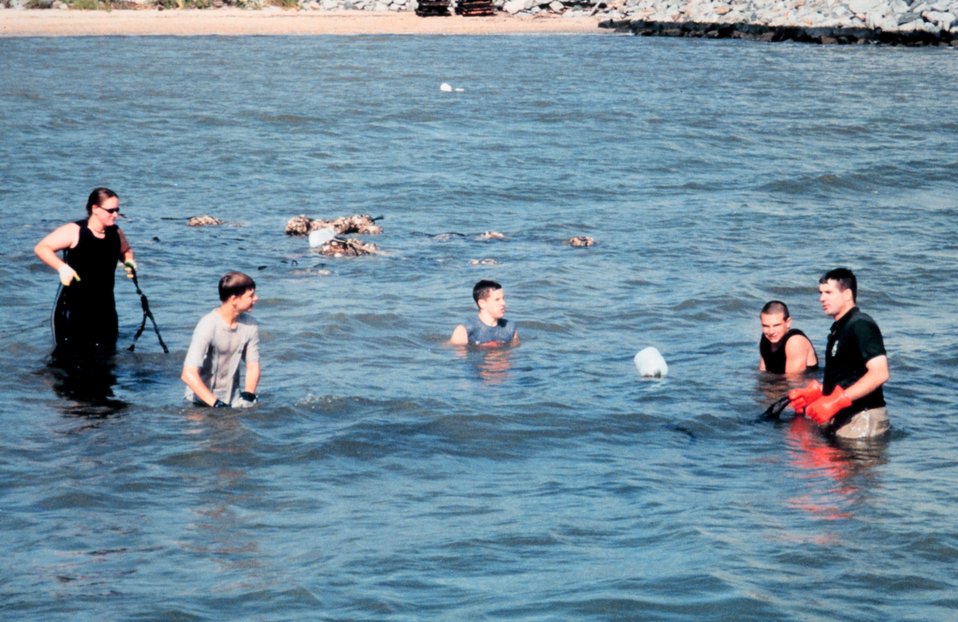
Volunteers from the Bay Bus Partnership Project assist the Oyster Recovery Partnership in their effort to transplant oyster spat before the population is decimated by the Stylochus flatworm. Preparing pallets of hatchery bags to be loaded aboard the ROBERT LEE.